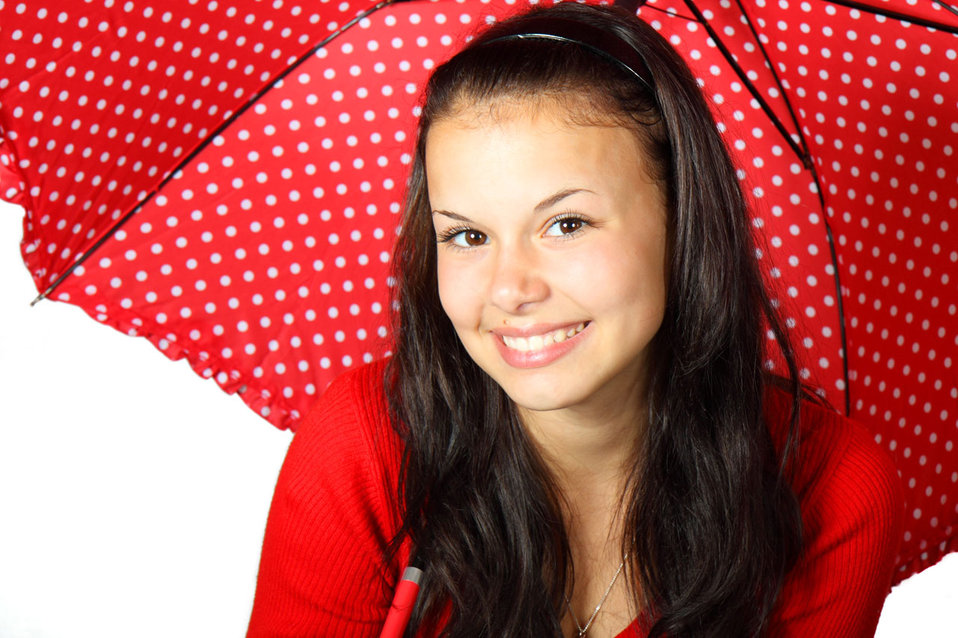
Cute woman with red umbrella

Young woman with red dotted umbrella smiling.